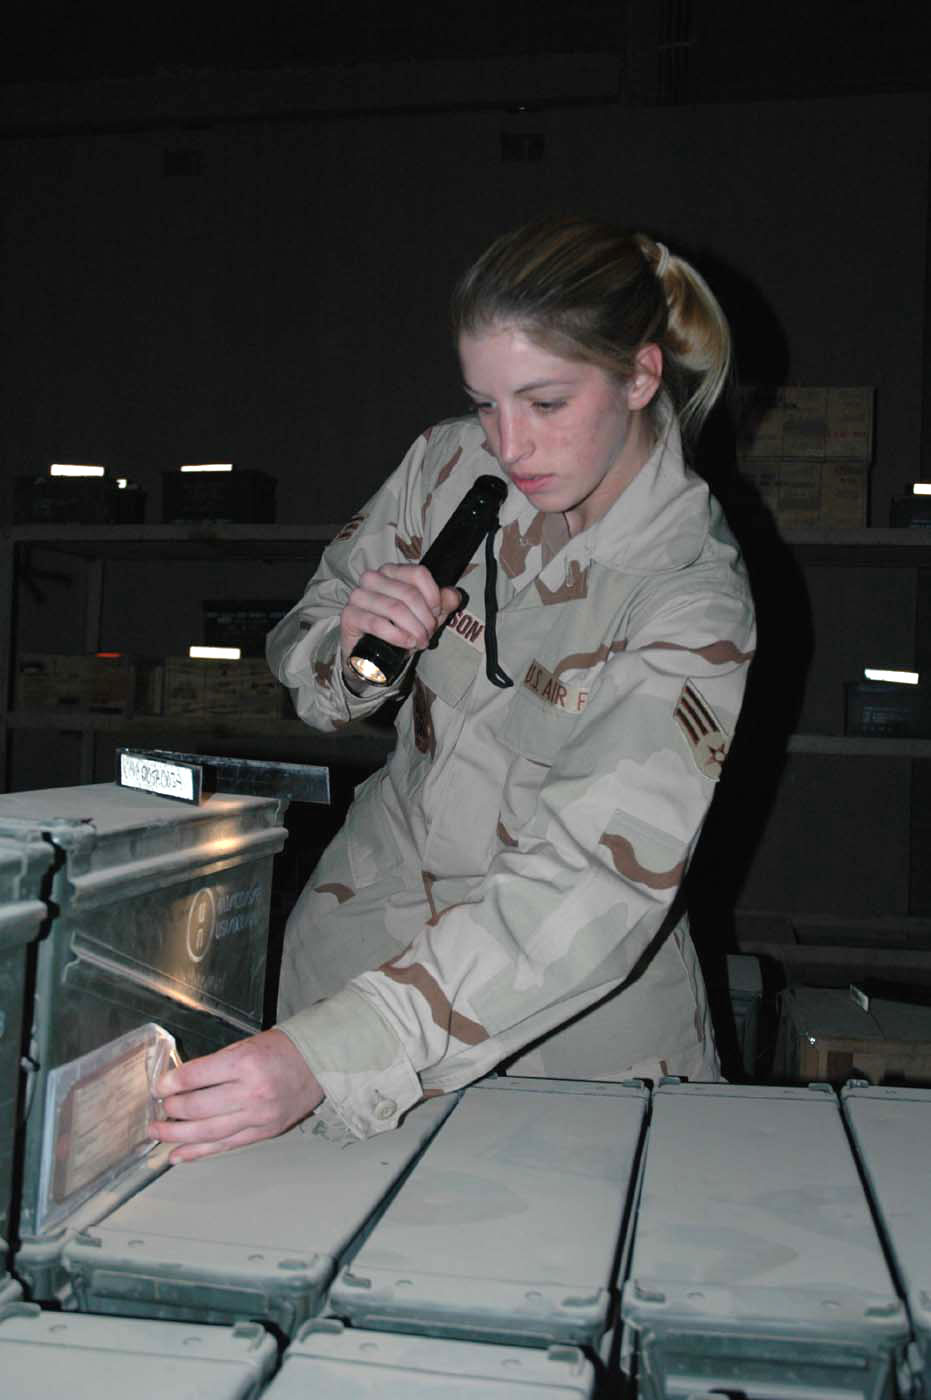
Munitions Airmen get back to basics

KIRKUK AIR BASE, Iraq (AFPN) -- Senior Airman Mandi Wilkinson checks the inspection date on a box of small arms munitions. Airman Wilkinson is one of five Airmen in the AMMO flight who manages the bomb dump here.